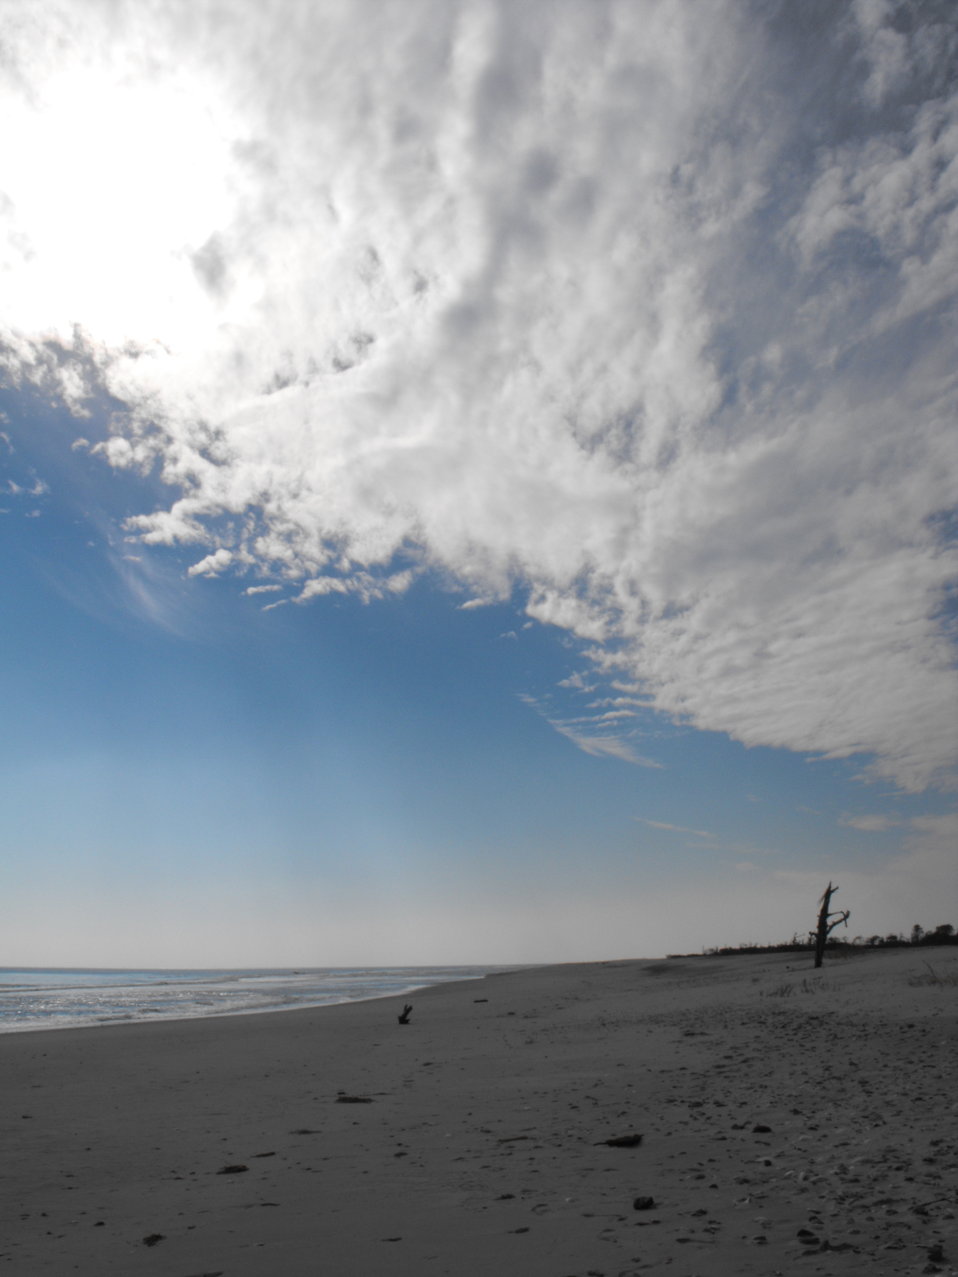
Wild Beach at Chincoteague National Wildlife Refuge / Assateague Island National Seashore.